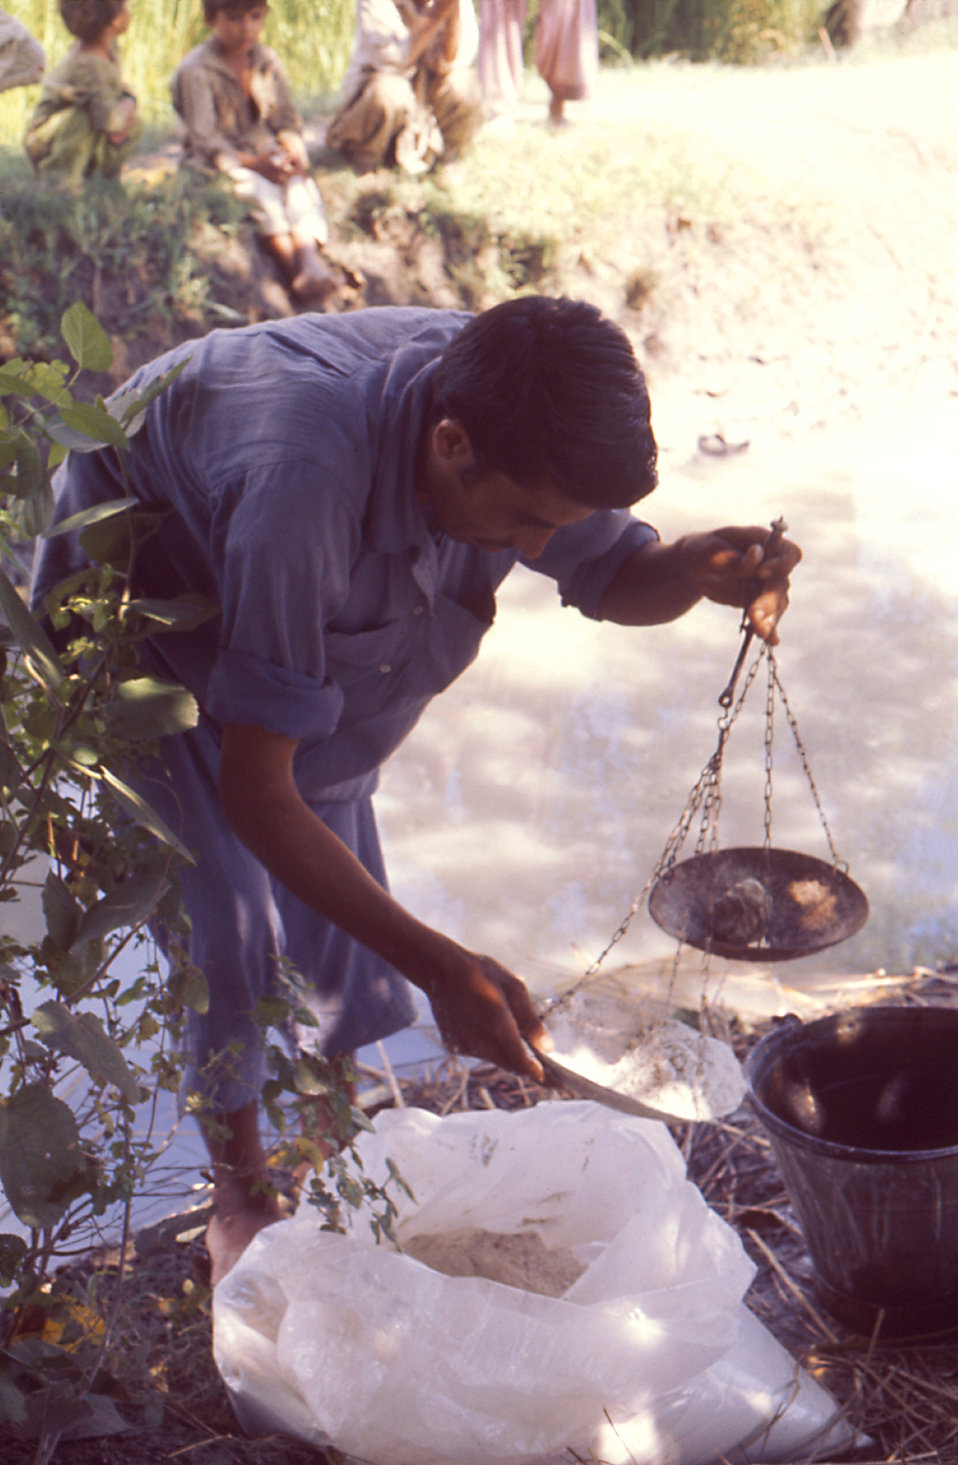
This 1976 image depicts a Pakistani malaria control worker measuring malathion spray powder without covering his exposed skin.